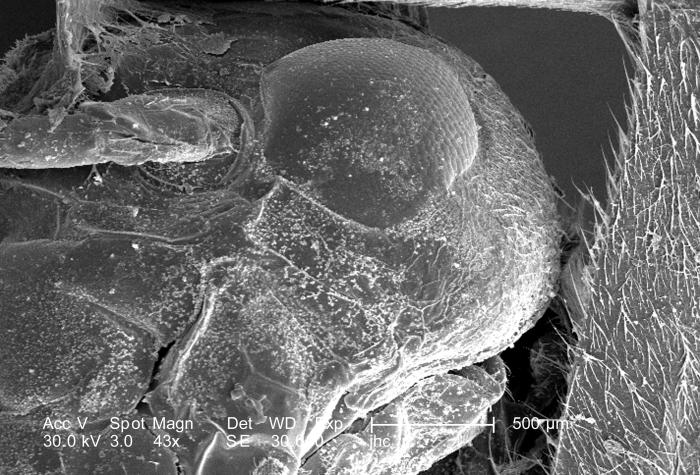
Under a low magnification of 43X, almost 4X greater than PHIL 10125, this scanning electron micrograph (SEM) depicted a rather ominous scene, for entangled in this brown recluse spider web was the exoskeletal remains of an unidentified insect, which was believed to be an ant. Known as 'spider silk', the strands of silk are produced by the spider's 'spinnerets', which are glands located in the distal tip of its abdomen. Once the prey has become entangled in the web, the spider will cautiously, though aggressively, approach the prey, subduing it with a neurotoxic bite, which also contains proteolytic, or protein-destroying enzymes, and further enwraps the prey in a web cocoon like the one seen here. In this particular view you'll note one of the victim's compound eyes, adjacent to which was the proximal end of one of its two antennae.